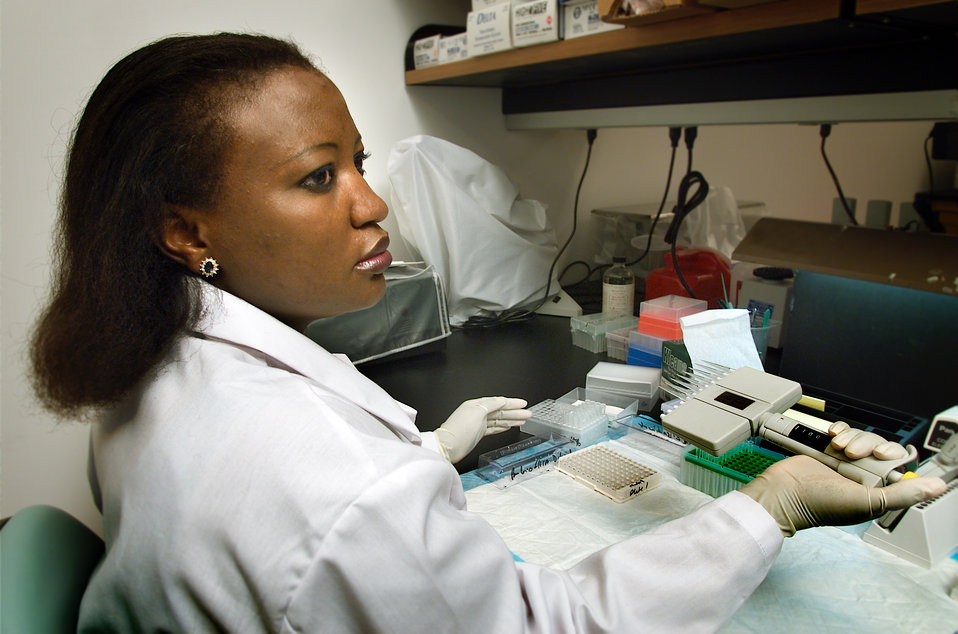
Mary Ari, Ph.D., of the Centers for Disease Control's Meningitis and Special Pathogens Branch (MSPB), in the National Center for Infectious Diseases (NCID), was shown utilizing an Enzyme-Linked Immunosorbent Assay, sometimes referred to as an ELISA